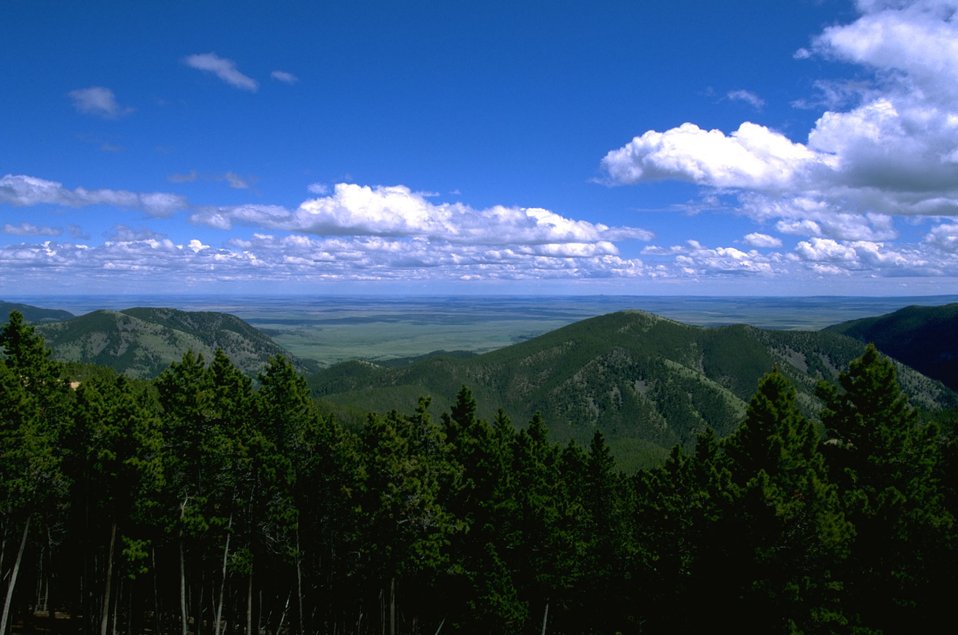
Trees, mountains and a valley in the Judith Mountains